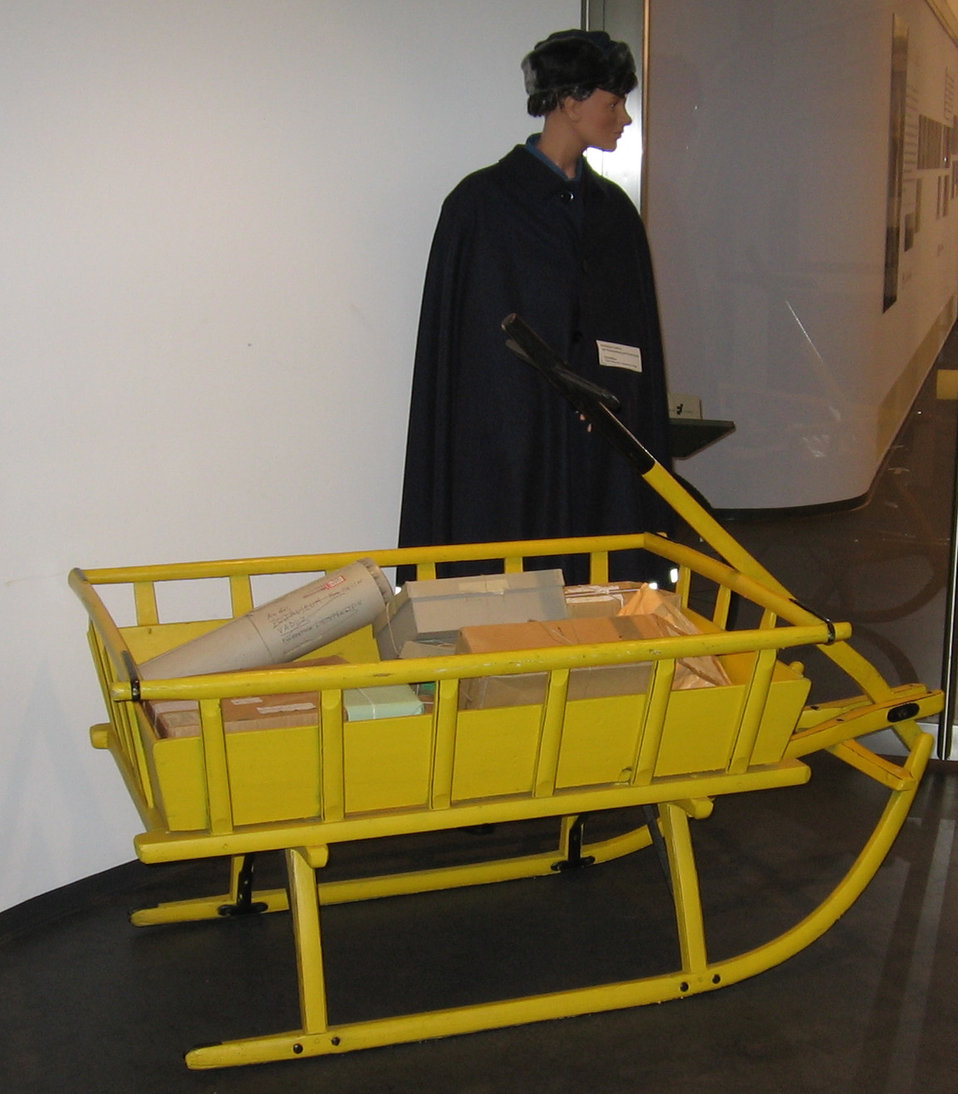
Vaduz, Liechtenstein: Postage Stamp Museum, postal sledge. Polski: Vaduz, Liechtenstein: Muzeum Filatelistyczne, sanie pocztowe. Русский: Вадуц (Лихтенштейн): Почтовый музей - почтовые сани.